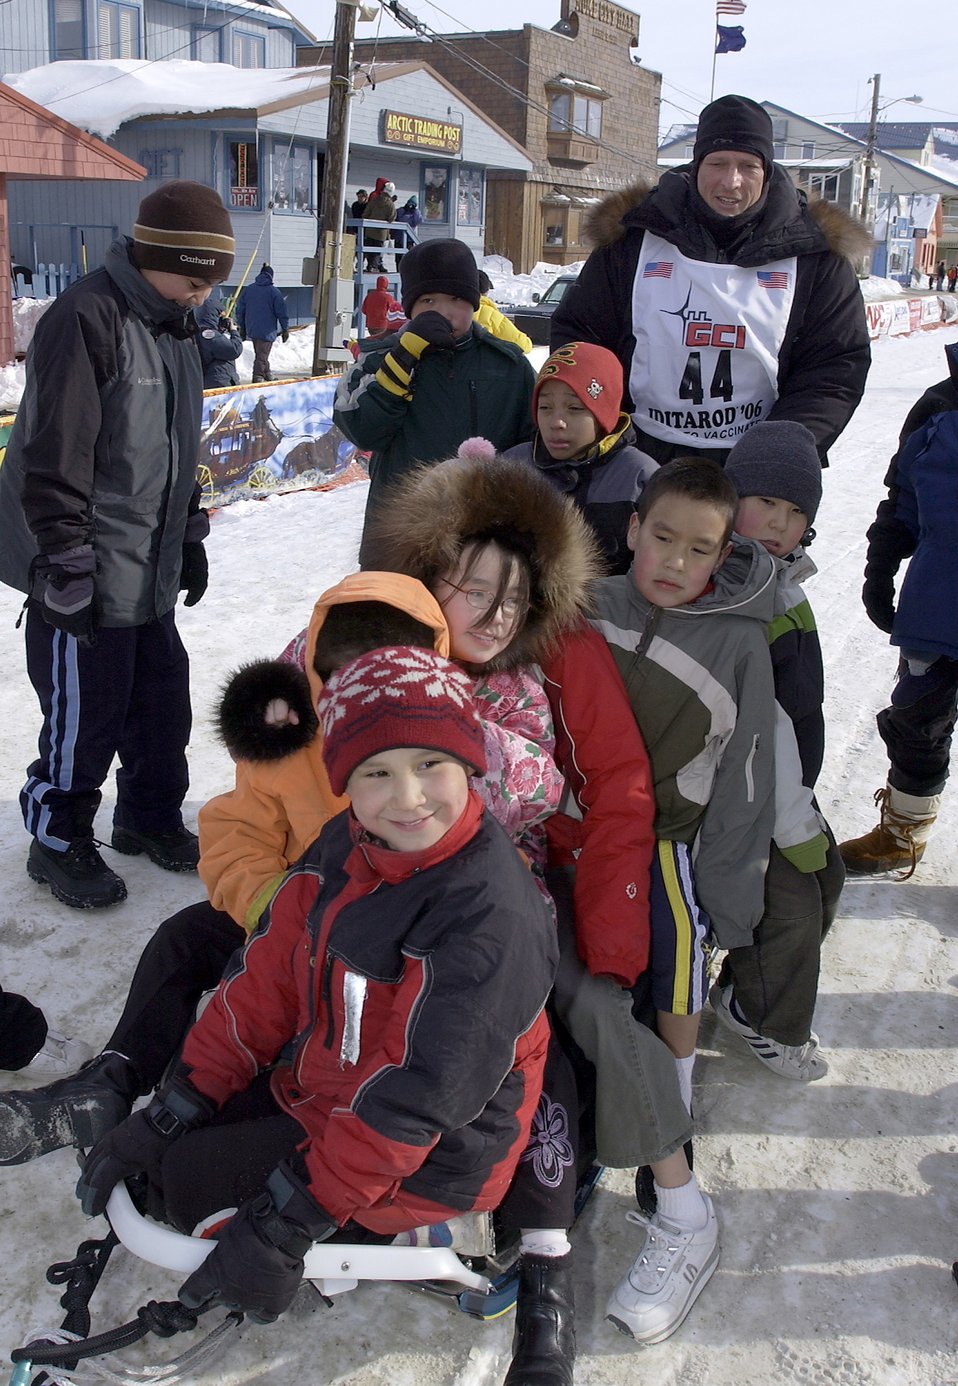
Air Force doctor finishes Iditarod with flourish

Local children sit on Maj. (Dr.) Thomas Knolmayer's sled at the finish line of the 2006 Iditarod Sled Dog Race in Nome, Alaska, Friday, March 17, 2006. Doctor Knolmayer finished the 1,150-mile race across Alaska in 11 days, 22 hours and 13 minutes, bettering his time from last year by 47 hours. Doctor Knolmayer is chief of surgery at the 3rd Medical Group at Elmendorf Air Force Base, Alaska.